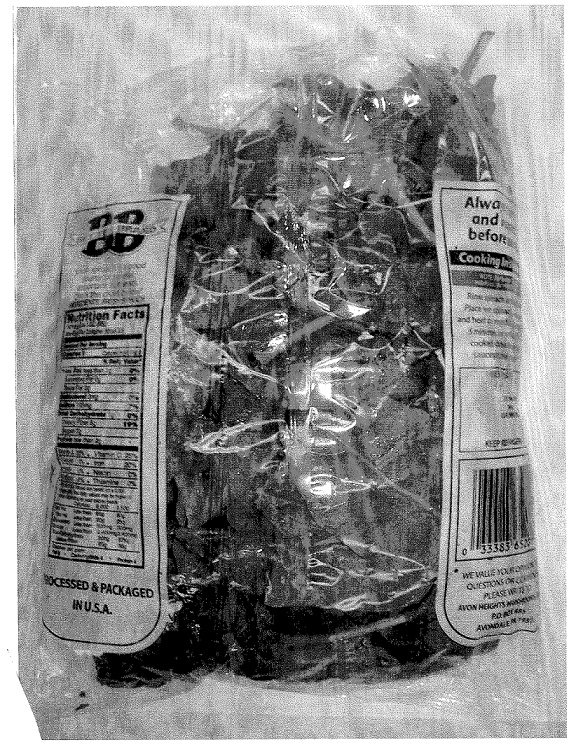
RECALLED - Fresh Spinach

December 23, 2011 - SAvon Heights Mushrooms, Inc. Recalls Fresh Spinach Because of Possible Health Risk For additional information, please refer to the company issued press release available on FDA's web site at www.fda.gov/Safety/Recalls/UCM285071